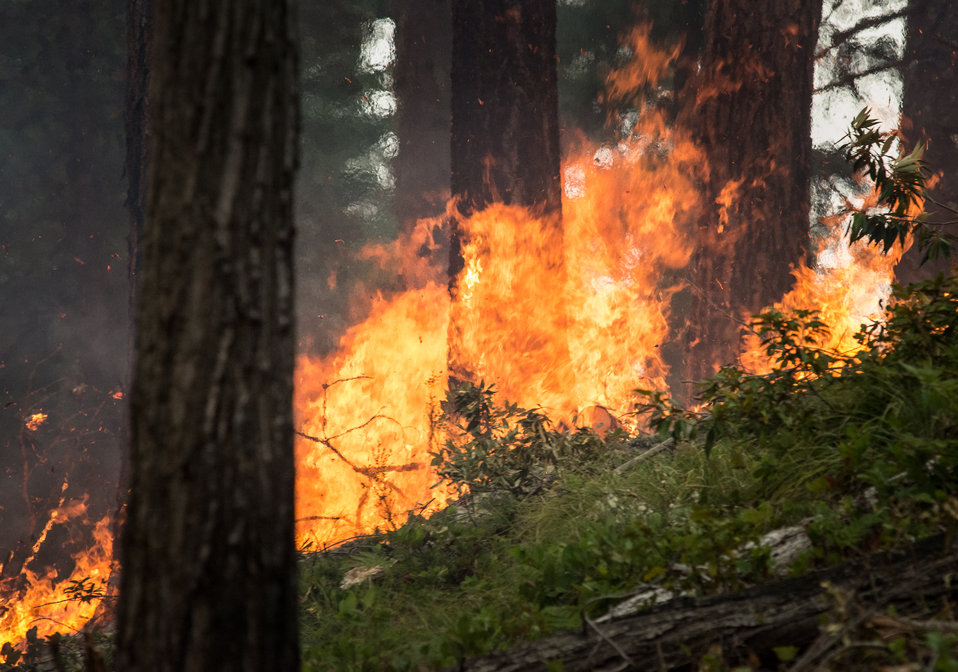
Geronimo Interagency Hotshot Crew, Department of the Interior (DOI) Indian Affairs (IA) Bureau of Indian Affairs (BIA) San Carlos Agency in Arizona; on assignment at the Big Windy Complex Wildlands Fire, approximately 15 miles west of Interstate-5 and East Northeast of Galice, Oregon, conducts a prescribed burn 'burnout' operation to help stop the main fire that may head toward this roadway, on Friday, Aug 9, 2013. The primary mission of the Interagency Hotshot Crews (IHC) is to provide a safe, organized, mobile and highly skilled hand crew for all phases of wildland fire suppression. The arduous duties and specialized assignments required of IHC personnel require uniform staffing, certification, training, equipment, communications, transportation, organization, and qualifications that adhere to interagency standards and guidelines.